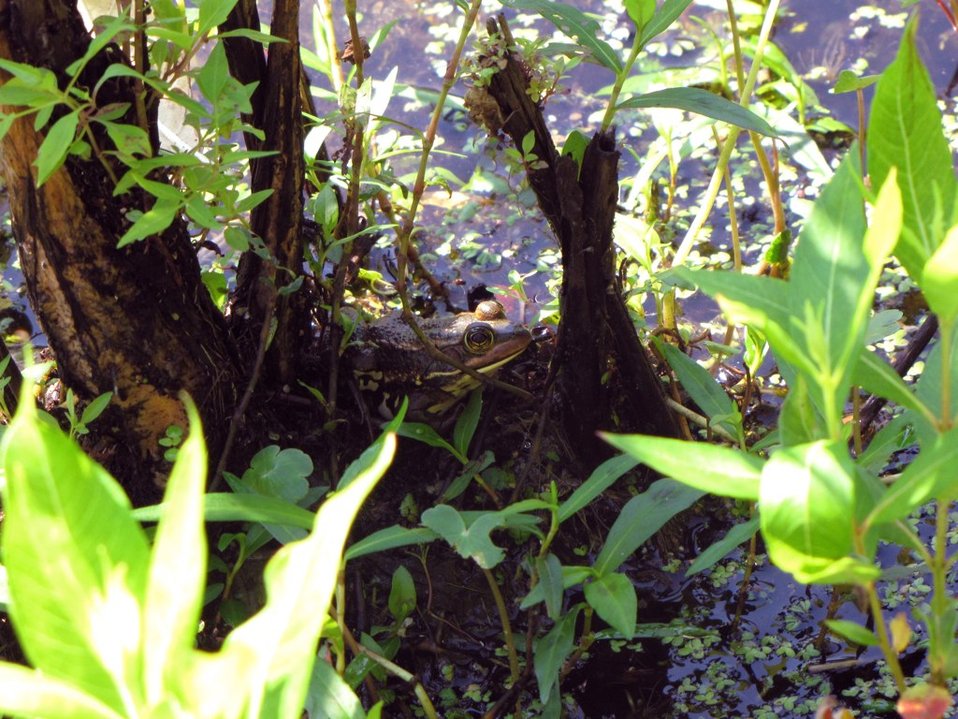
Mattaponi Wildlife Management Area, Virginia

Survey (June 27 - 28, 2012)

Carpenter frog (Lithobates virgatipes) a Virginia State species of concern.